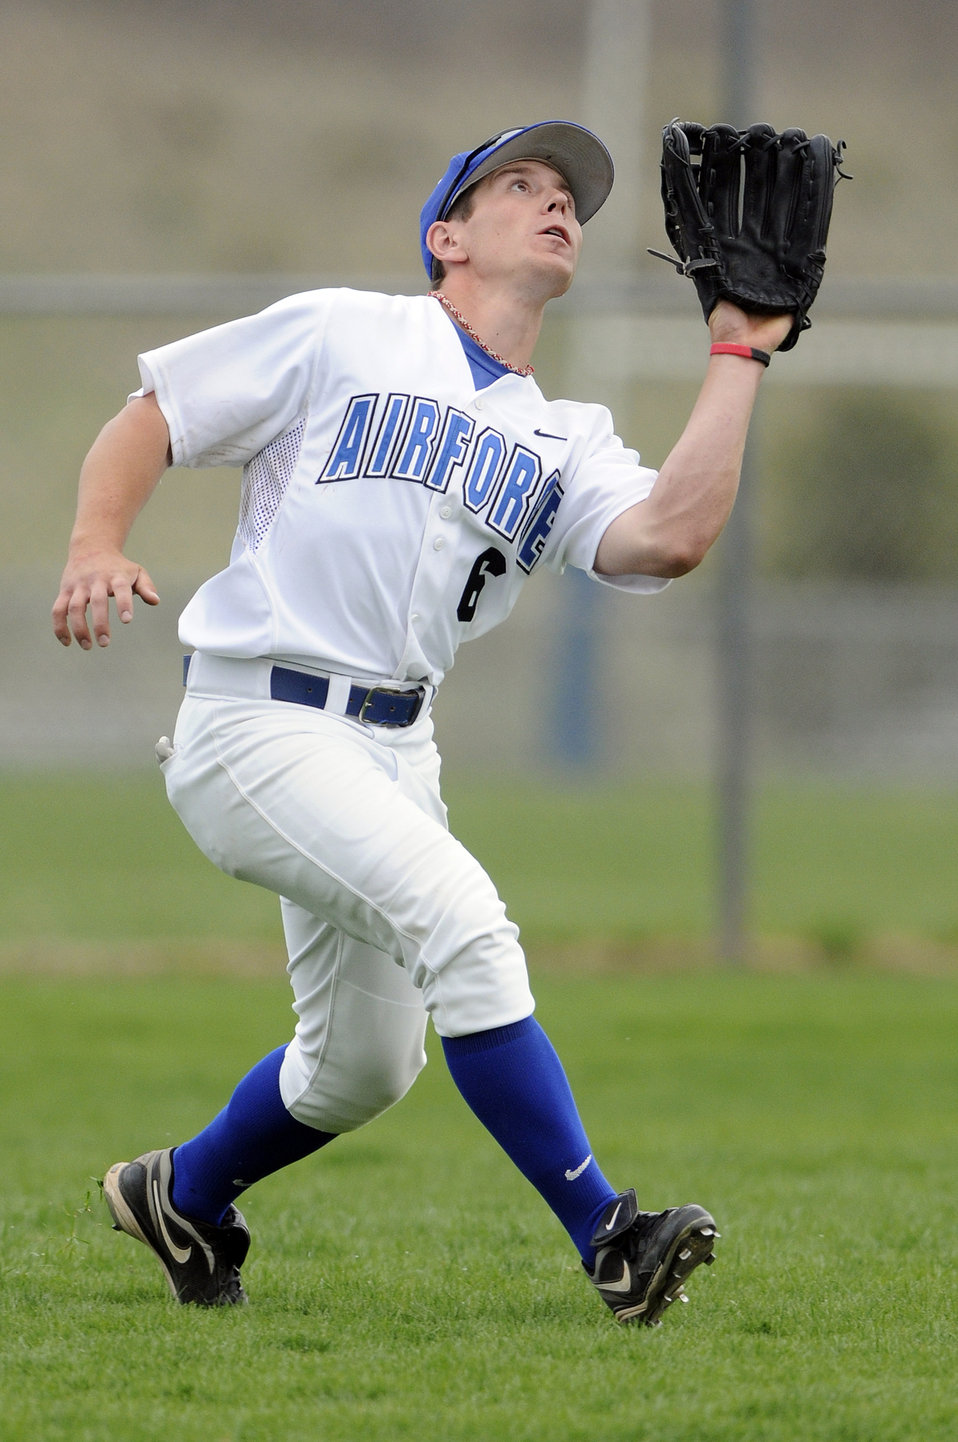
Baseball season ender

Air Force Academy left fielder Ben Ausbun chases down a fly ball during a two-game series with the University of New Mexico Lobos at Falcon Field in Colorado. The Falcons lost both games, and finished the season with a 14-37 overall record.